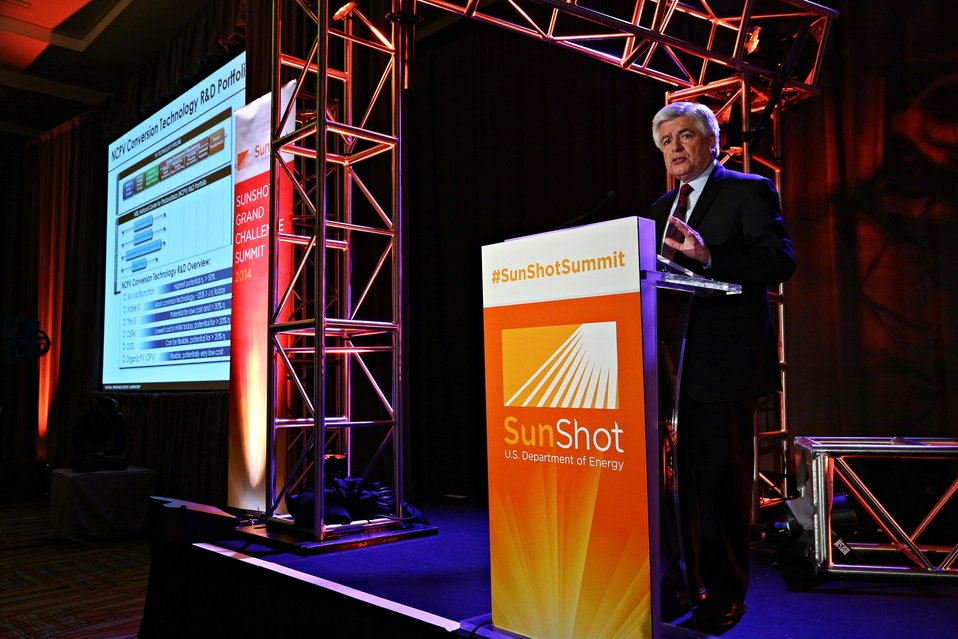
Keynote Session 4

Dr. Dan Arvizu, National Renewable Energy Laboratory shares compelling stats during his keynote on the rapid growth of the solar industry.